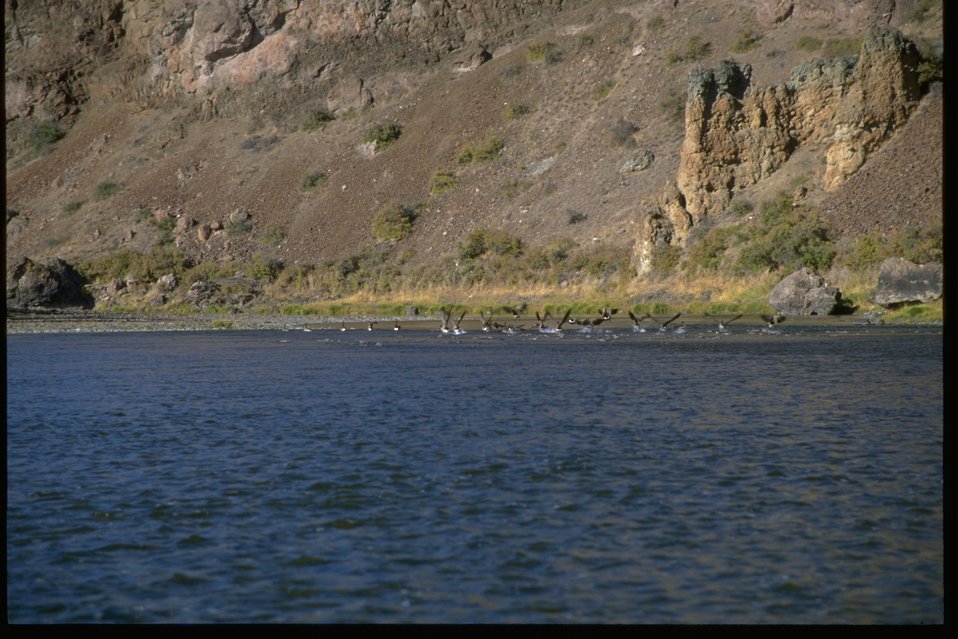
Geese in the John Day River.